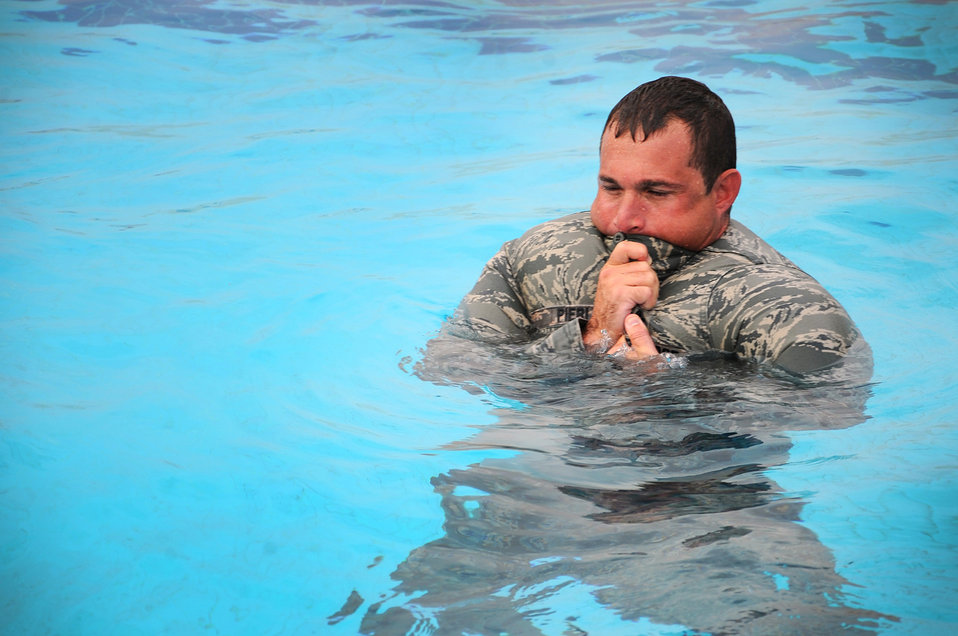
Staying afloat

Lt. Col. Ronald Pieri inflates his blouse during Marine combat water survival training at an air base in Southwest Asia. Members of the fire department there participated in this training to receive a combat water survival certification. Colonel Pieri is the 386th Expeditionary Civil Engineer Squadron commander.